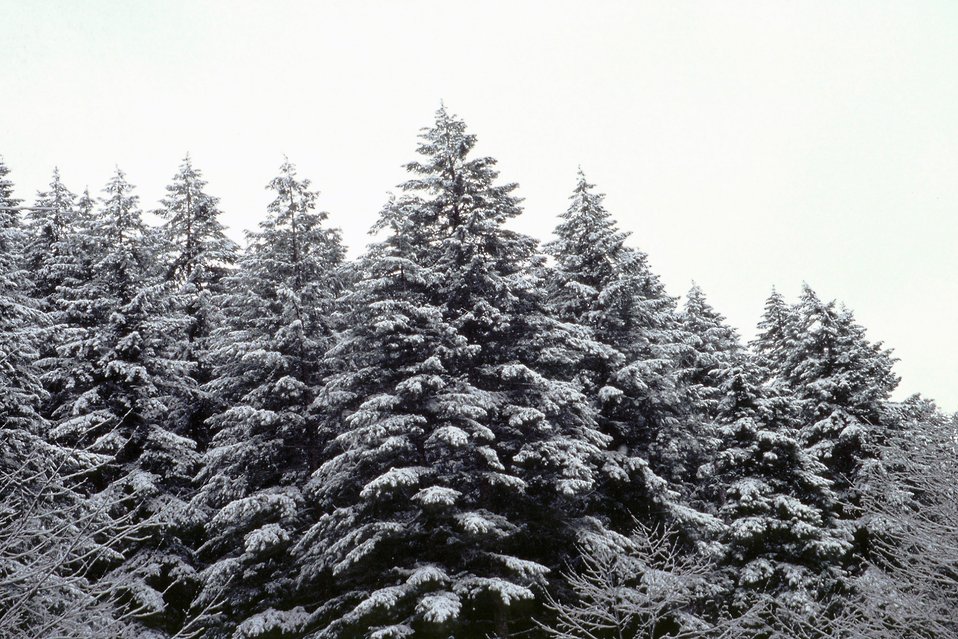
Mid Winter forest scene in the Mollala Corridor.